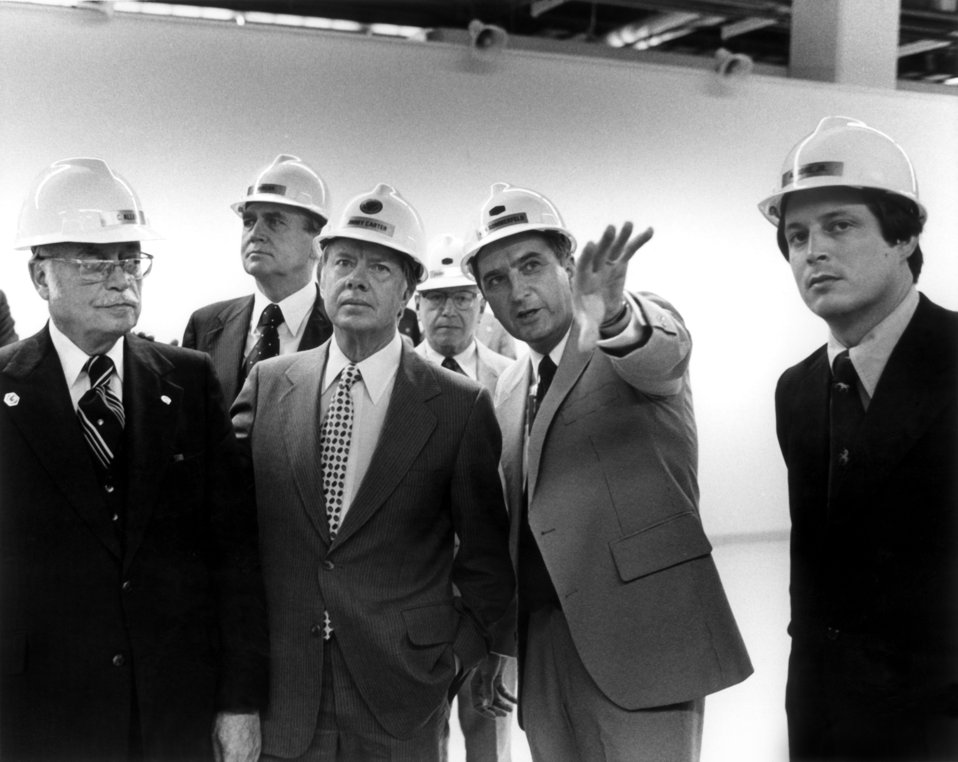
President Jimmy Carter in Oak Ridge

78-306 DOE photo by Frank Hoffman

President Jimmy Carter in Oak Ridge Tennessee 5-22-1978